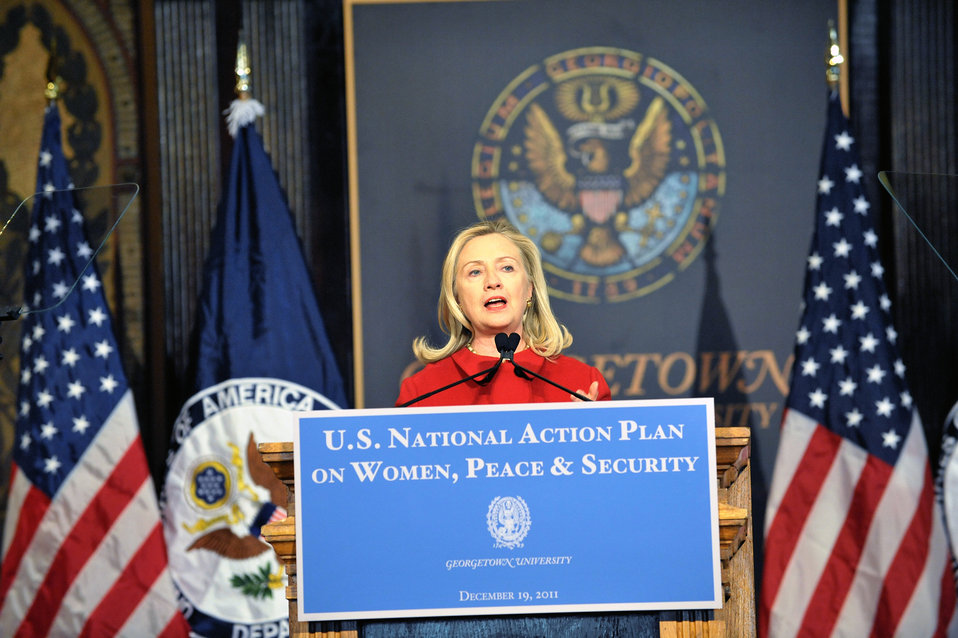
Secretary Clinton Delivers Remarks on Women, Peace, and Security

U.S. Secretary of State Hillary Rodham Clinton discusses new efforts across the U.S. government to support women's participation in peace and security, including plans to better protect women from conflict-related violence and promote women's leadership and perspectives in all aspects of conflict prevention, resolution, relief, and recovery, at Georgetown University on December 19, 2011.